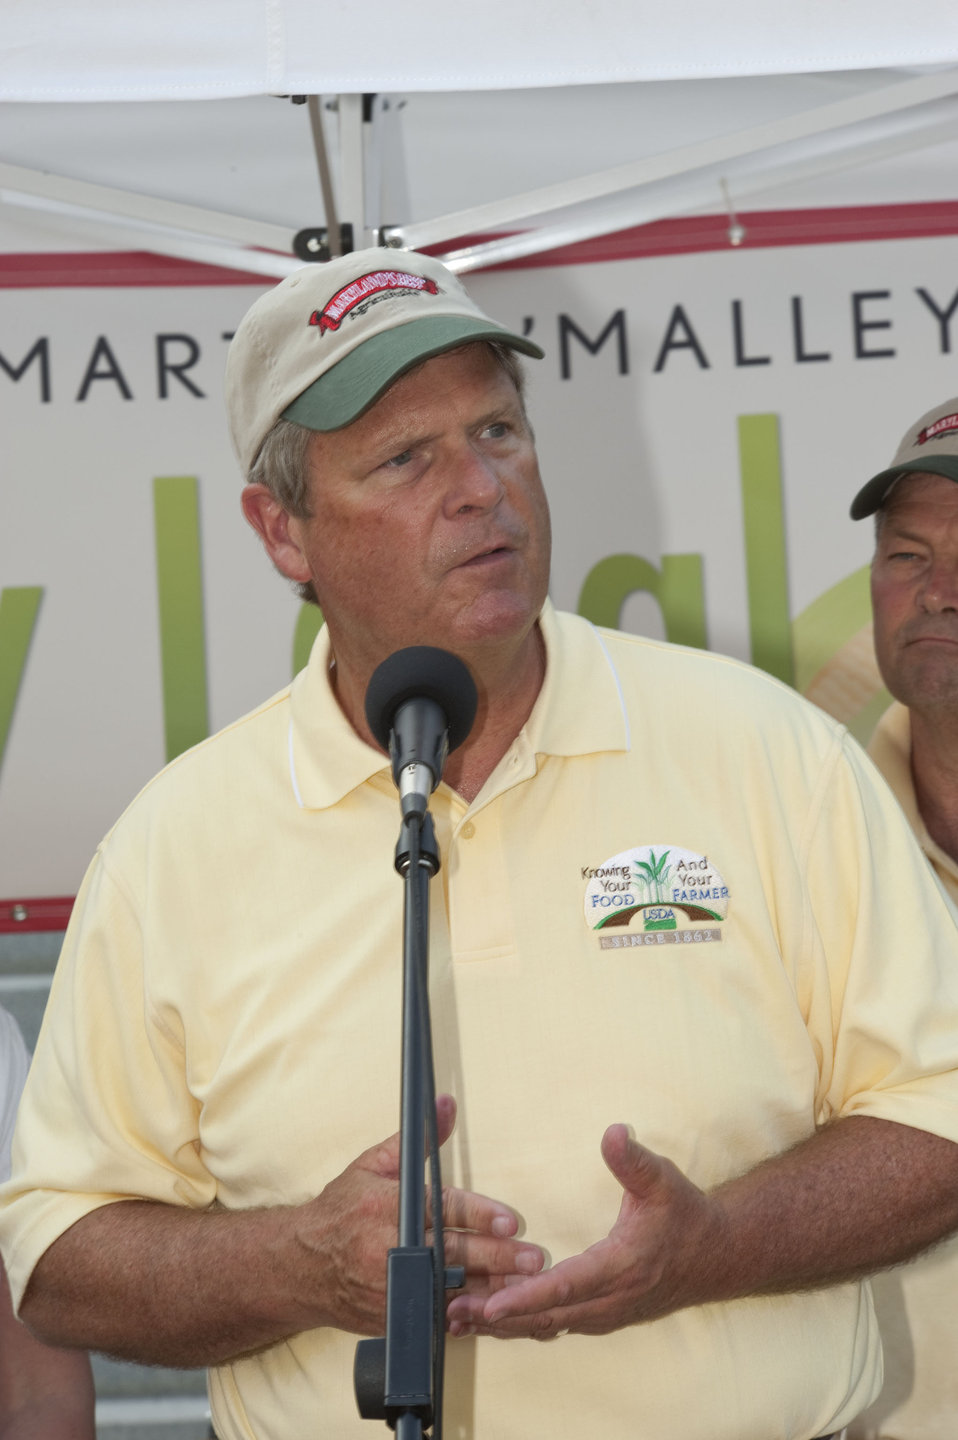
U.S. Department of Agriculture Secretary Tom Vilsack speaking at the 4th Annual Maryland Buy Local cookout held in Annapolis MD, on Thursday, July 21, 2011.